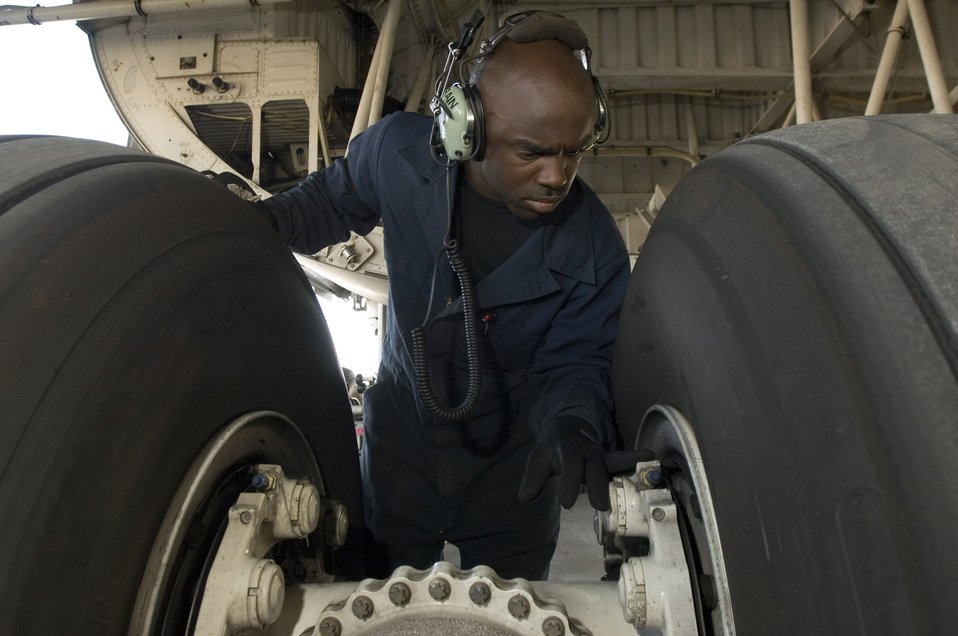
MORON AIR BASE, Spain -- Staff Sgt. Dante Davis checks the massive brakes on C-5 Galaxy. The hydraulics specialist is on temporary with the 4th Expeditionary Air Mobility Squadron to at this base in southern Spain. Sergeant Davis is from the 60th Air Maintenance Squadron, Travis Air Force Base, Calif.